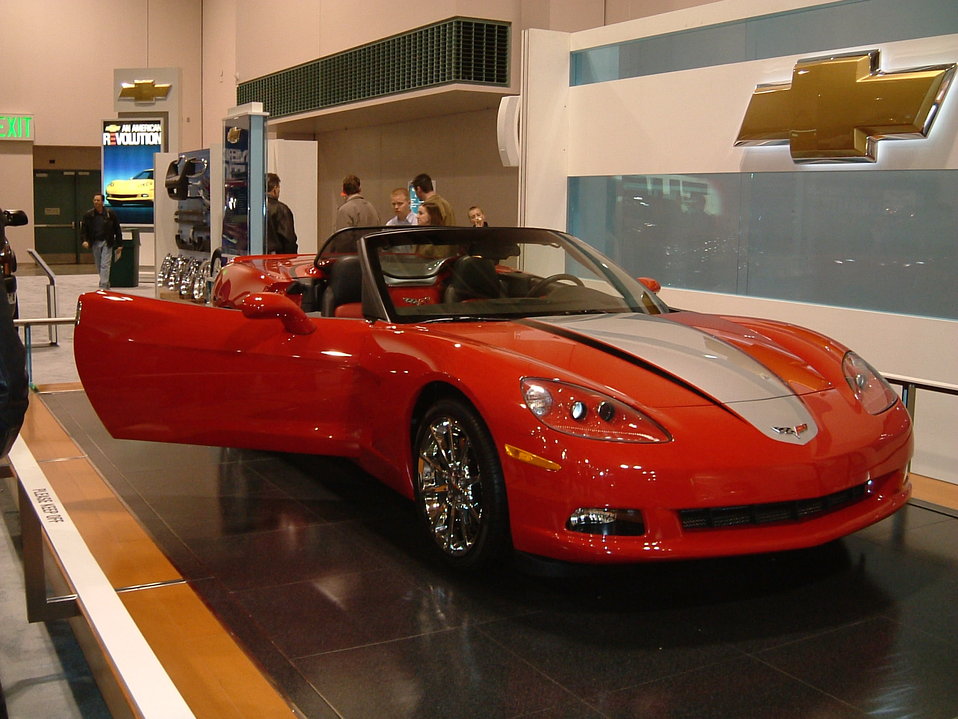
2006 Chevy Corvette